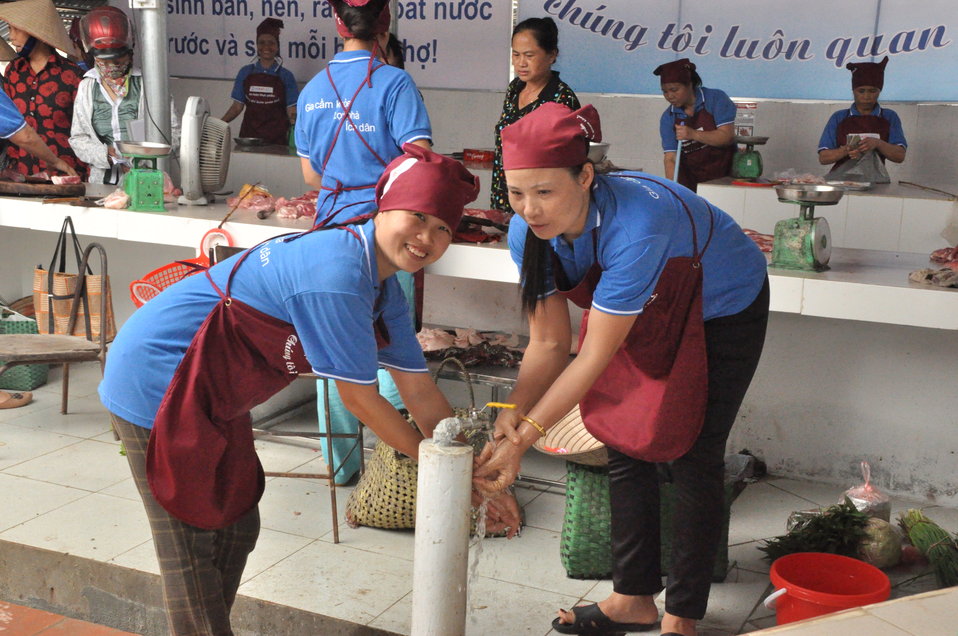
Handover Ceremony Hoa Mac Market Ha Nam

October 26, 2012